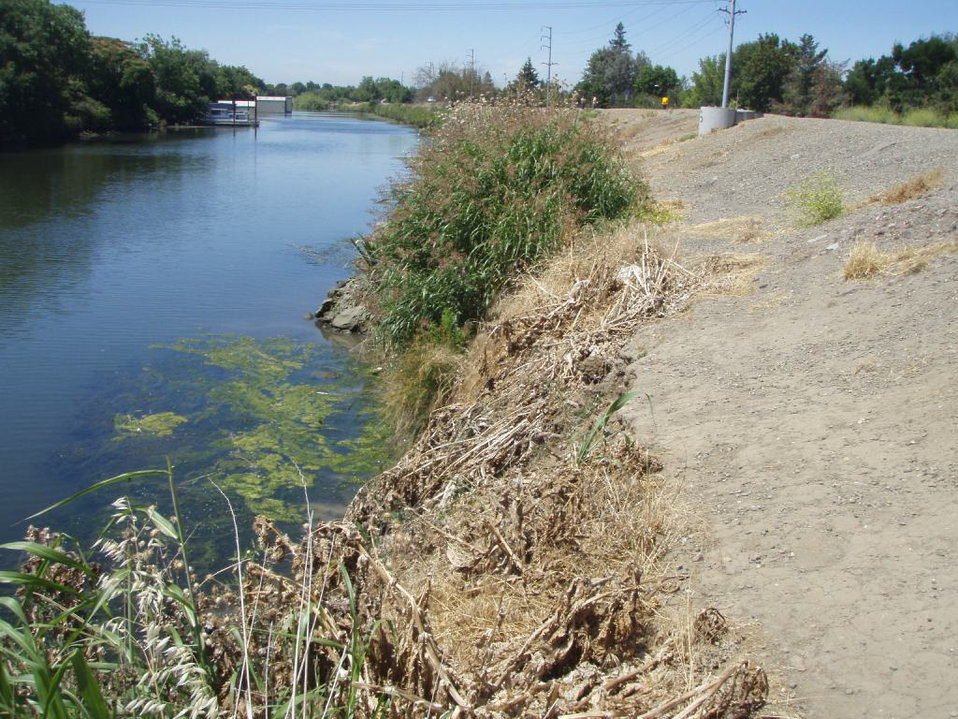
Levee erosion in the Stockton area

Levee erosion in the Stockton, Calif., area, shown during a levee inspection in 2010. The U.S. Army Corps of Engineers inspects levees in its Rehabilitation and Inspection Program to ensure levees don’t pose an unacceptable risk to lives and to provide levee managers and residents with detailed information on the condition of levees to help them make informed decisions about safety.